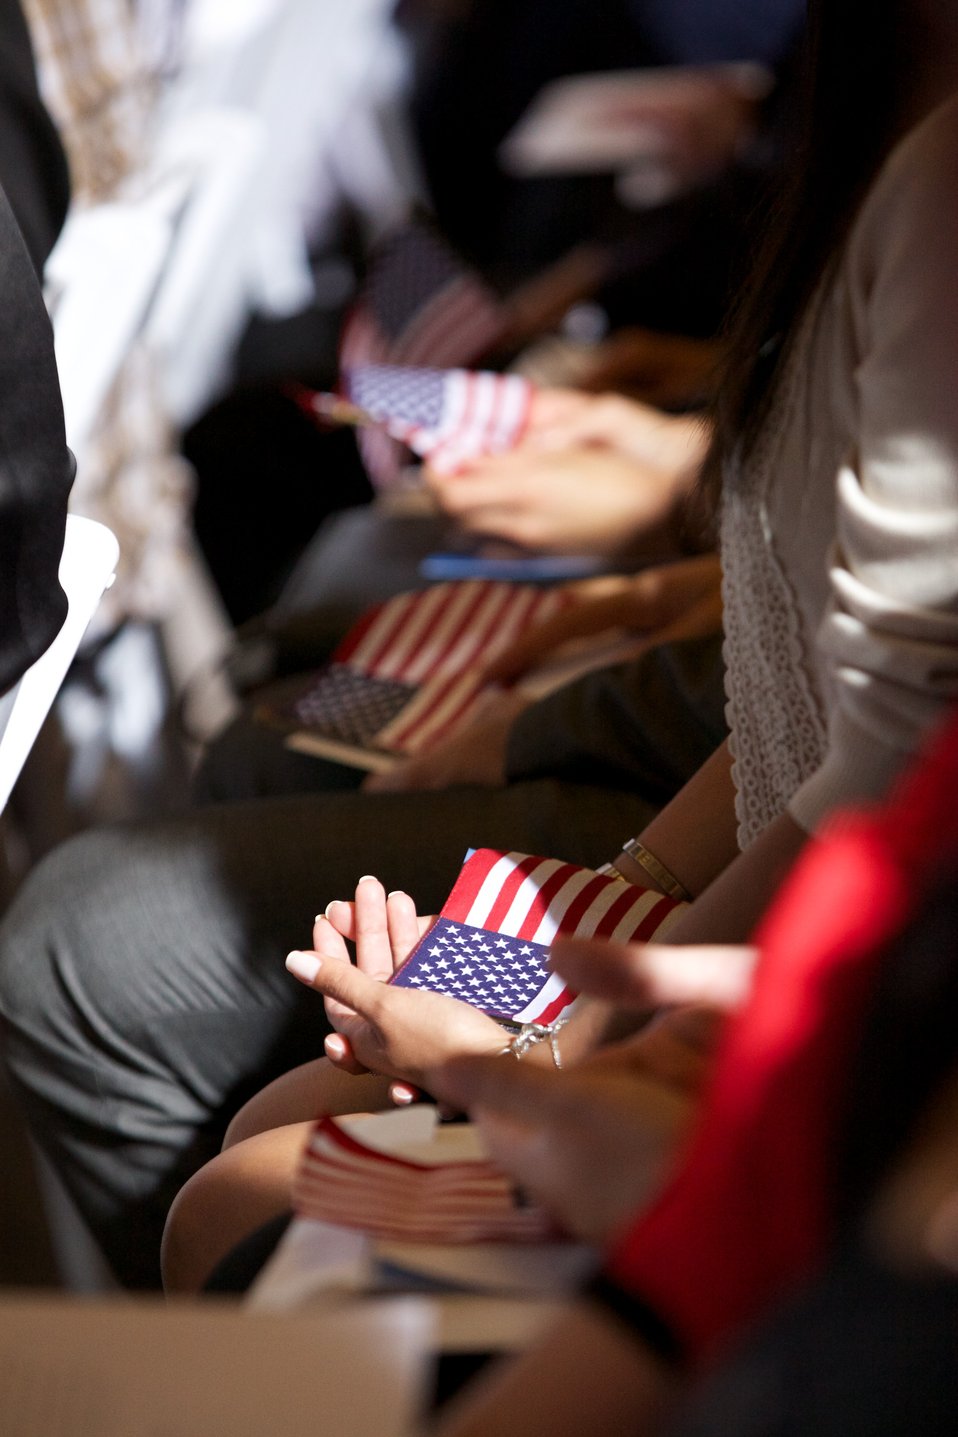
Naturalization Ceremony with Michelle Obama